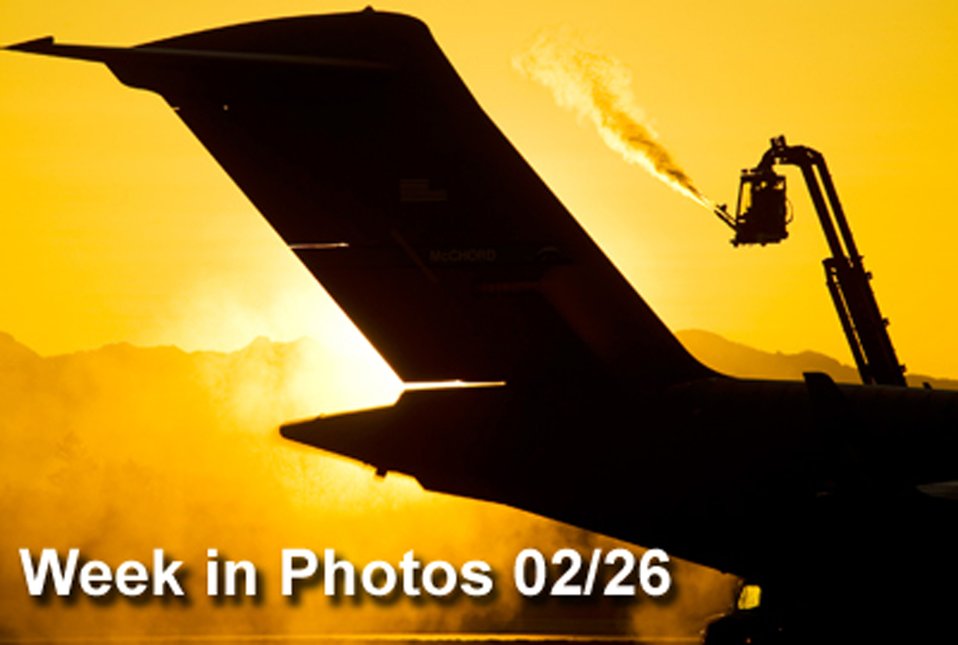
Air Force Week in Photos for Feb. 26, 2010, highlights photos from around the Air Force. In this photo by Abner Guzman, an Airman applies deicing fluid to the tail of a C-17 Globemaster III on the flightline at Joint Base Lewis-McChord, Wash.